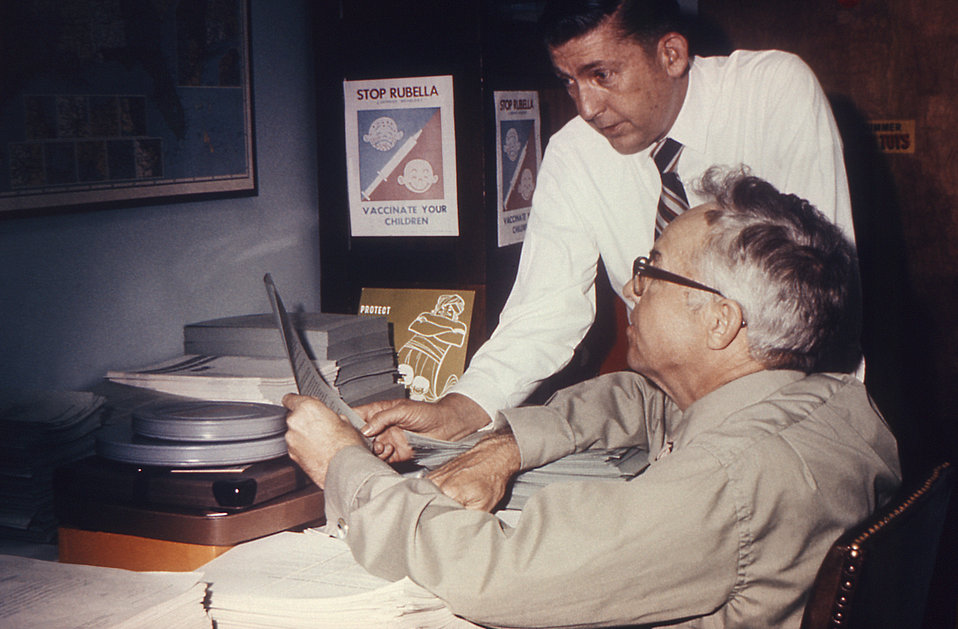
This 1971 photograph depicts two public health practitioners, public information officer, George Stenhouse (standing), and James Cox who were former staff members of the Office of Information, as they were discussing promotional materials used in the Centers for Disease Control's (CDC) 'Stop Rubella' campaign.